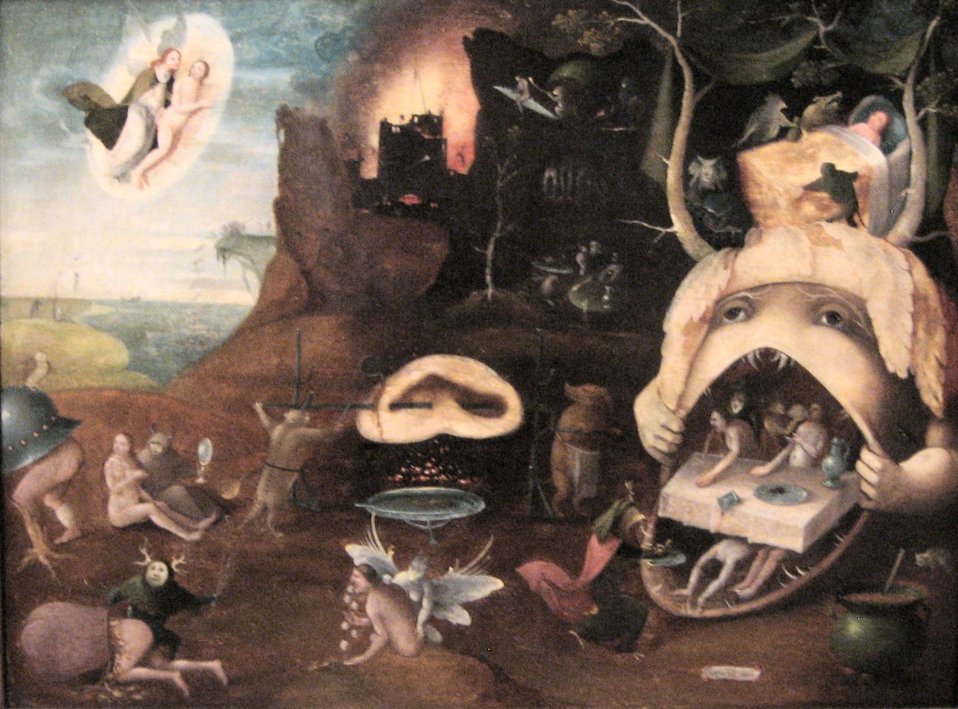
'The Vision of Tondalys', painting by a follower of Hieronymus Bosch, c. 1485, Denver Art Museum